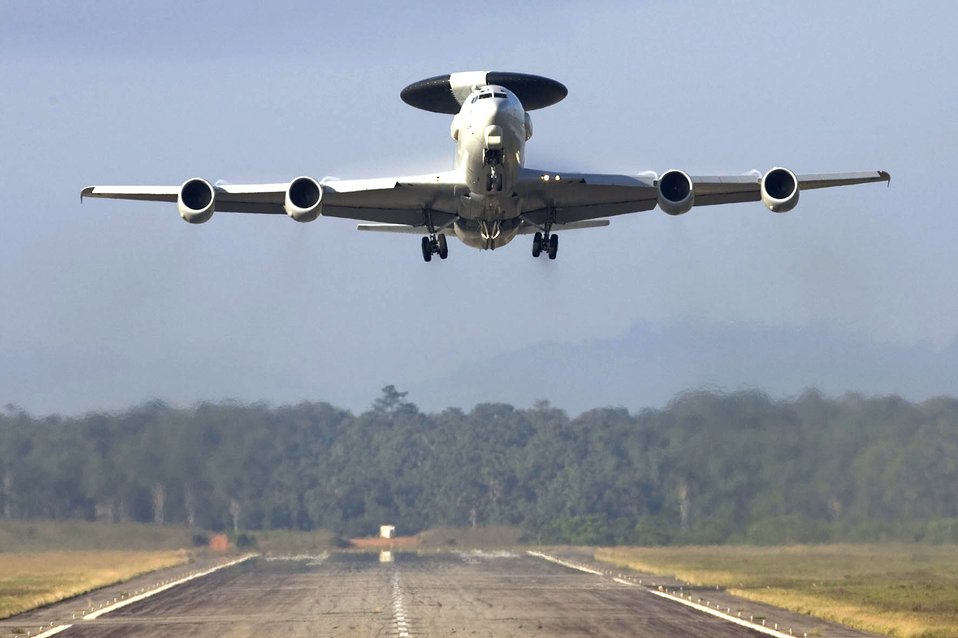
ESC delivers French AWACS capability

A French E-3F Airborne Warning and Control System aircraft takes off from Avord, France, for a final flight test leading up to the flight certification and delivery of the last aircraft to undergo the Radar System Improvement Program. The upgrade improves the E-3F's surveillance capability and electronic counter-countermeasures capability. The upgrade was managed by the Electronic Systems Center at Hanscom Air Force Base, Mass.